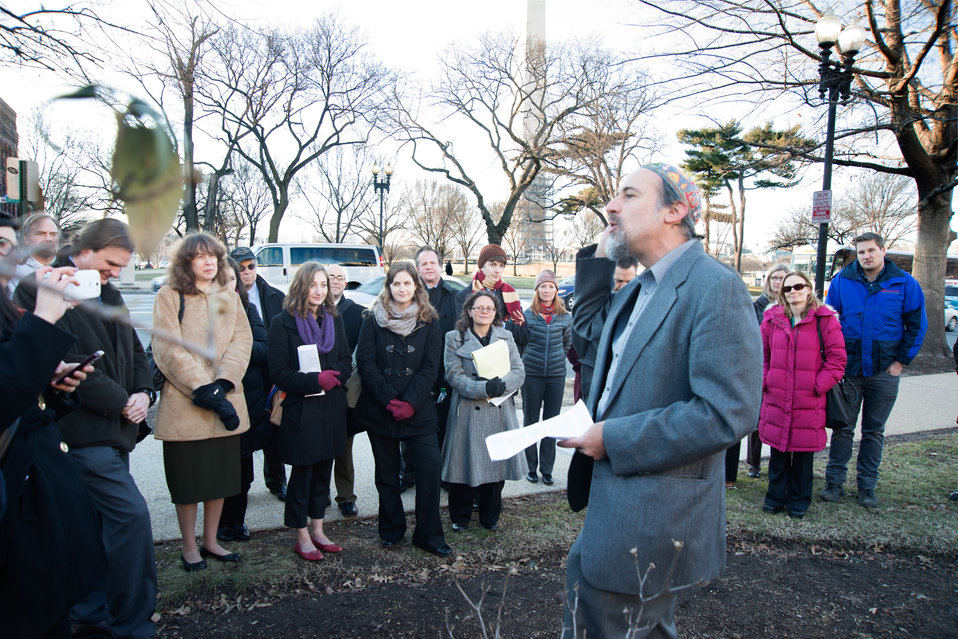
Adat Shalom Reconstructionist Synagogue Rabbi Fred Scherlinder Dobb speaks at the planting ceremony of a Redbud tree on the west lawn of the U.S. Department of Agriculture (USDA), on Thursday, Jan. 16, 2014. This ceremony commemorates Tu B’Shevat, the Jewish New Year of the Tree.